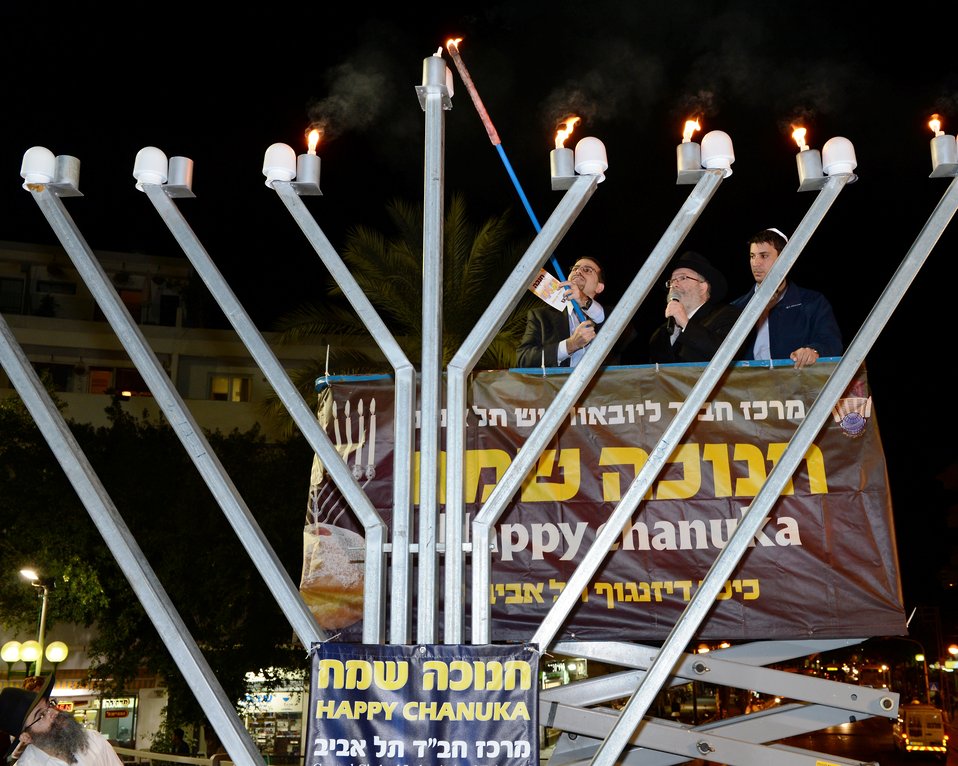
Ambassador Shapiro Lights the Menorah

U.S. Ambassador to Israel Daniel Shapiro lights the menorah in Dizengoff Square in Tel Aviv, Israel, December 12, 2012.